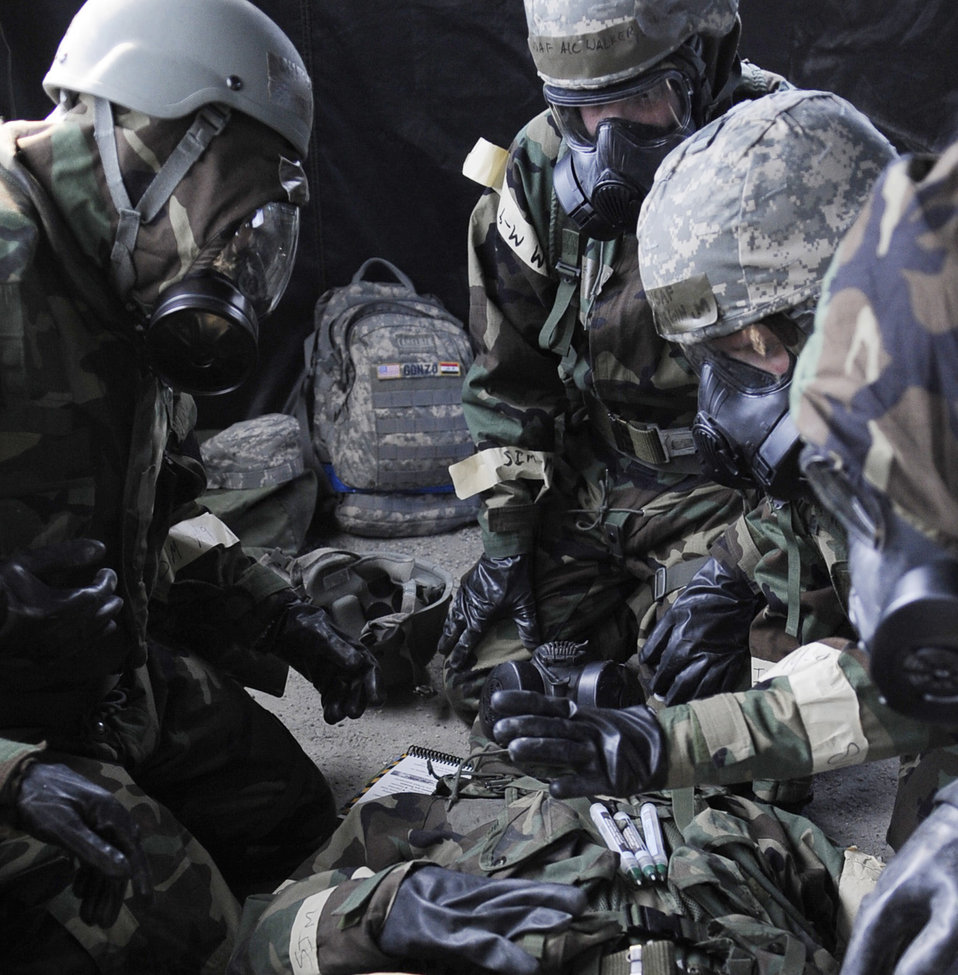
Vital signs

Airmen